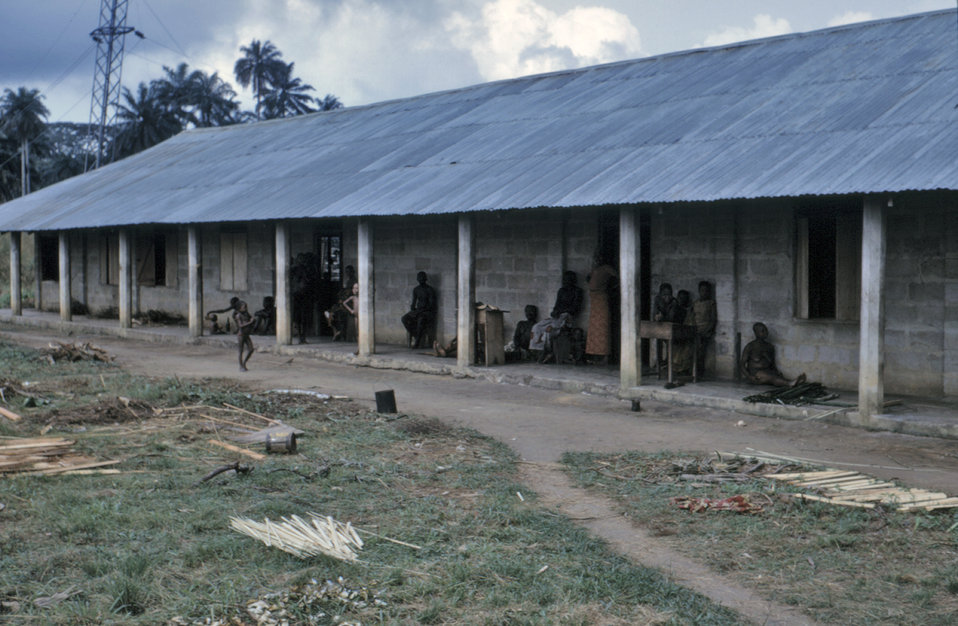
This 1968 photograph showed the outside of a typical refugee hospital or camp during the Nigerian-Biafran civil war.